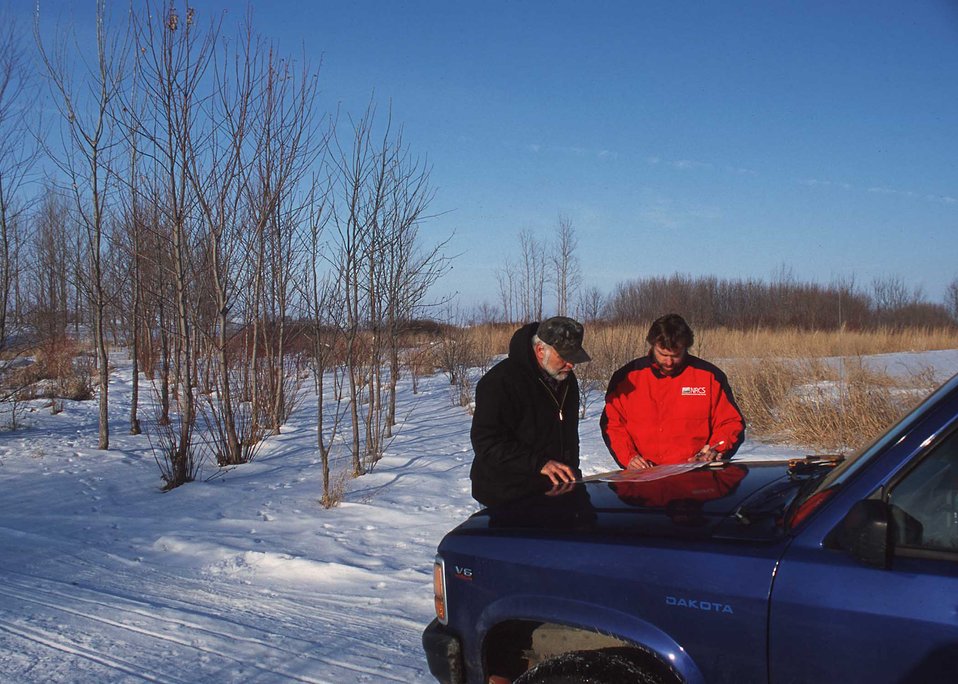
Conservation planning along Bear Creek in central Iowa includes providing for the needs of wildlife, especially during harsh winters in the state.